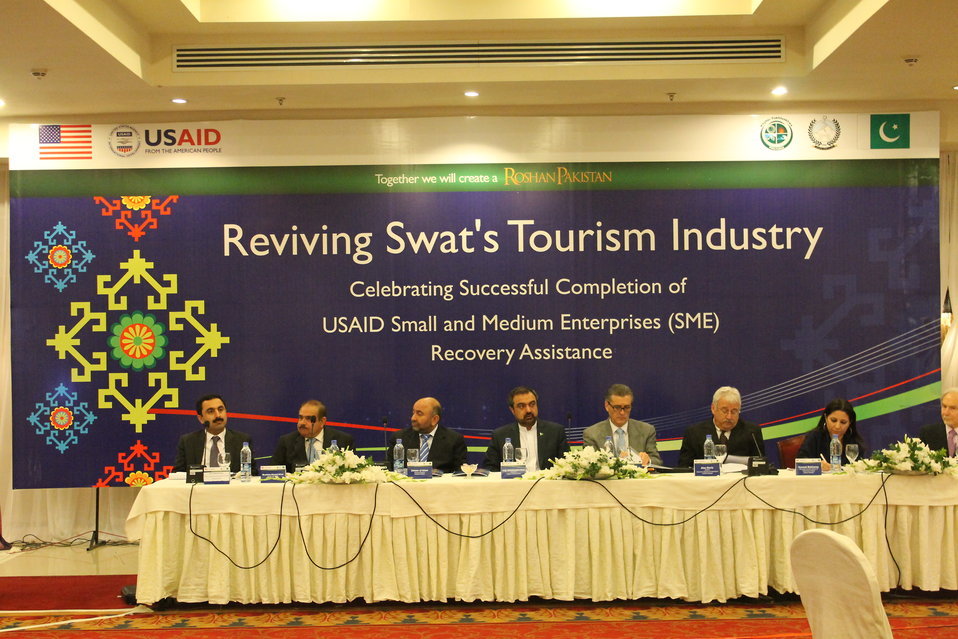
Graduation event of USAID Firms Project's Malakand Small and Medium Enterprises (SME) Recovery Assistance Program

U.S. has supported the recovery of 239 Swat’s hotel and 22 fish farming SMEs through provision of cash and in-kind grants under the Firms Project